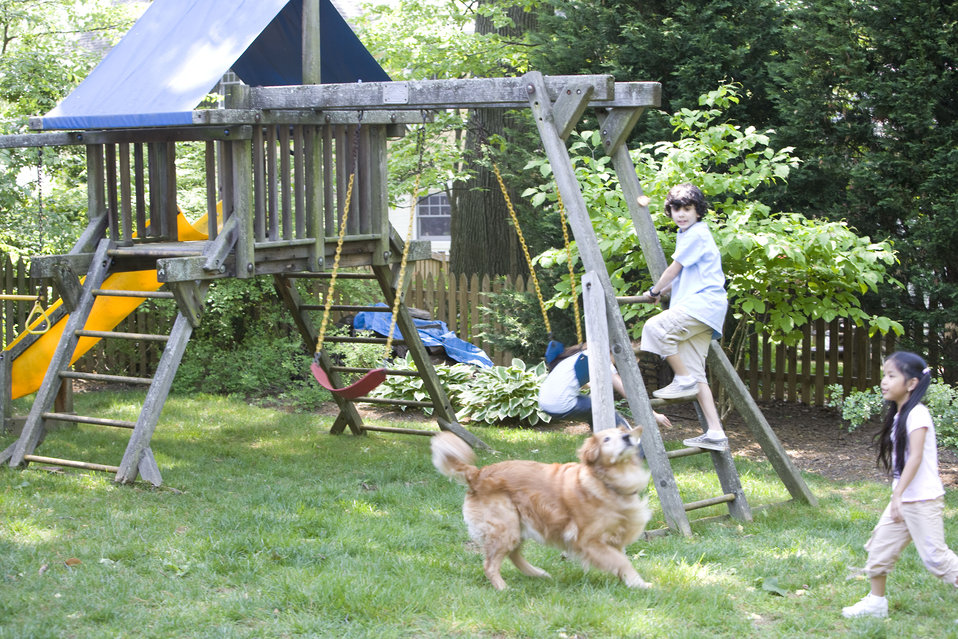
Children love playing outside, and these children were thoroughly enjoying their wooden swing set, and all were having fun in the fresh outdoor air, and the beautiful weather. It's important to note that older wooden playsets may have been treated with arsenic and/or creosote, and therefore, parents need to know if these chemicals were used in their manufacture.